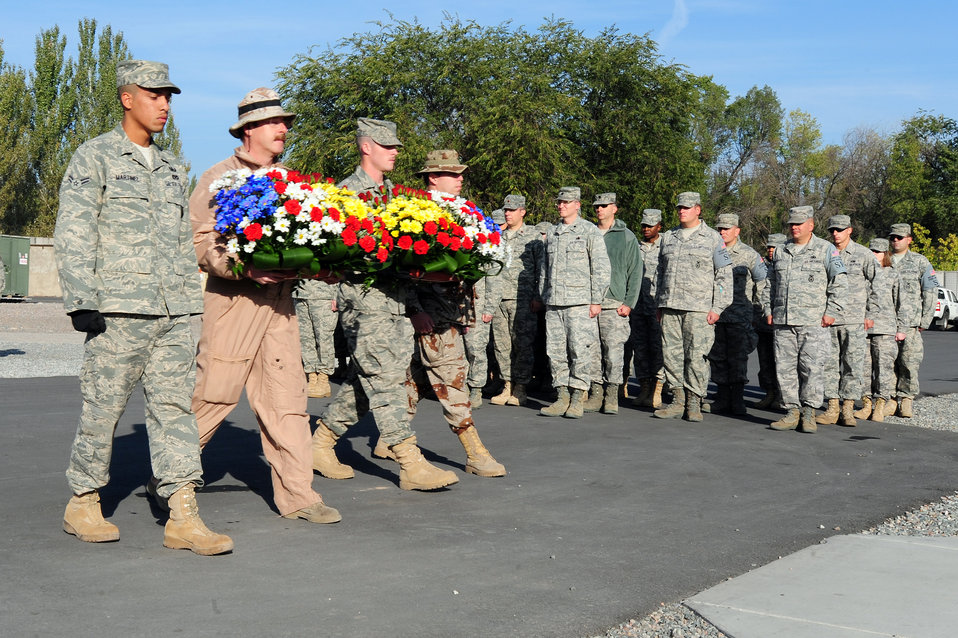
Airmen bid farewell to Spanish forces at Transit Center at Manas

American and Spainish airmen proceed to 9/11 and Spanish memorials to place flowers in remembrance of those who have made the ultimate sacrifice in support of Operation Enduring Freedom Oct. 13, 2009, at the Transit Center at Manas, Kyrgyzstan. The Spanish Mizar Detachment marked the end of a tour by conducting a lowering of the Spanish flag signifying a halt in service at the Transit Center.